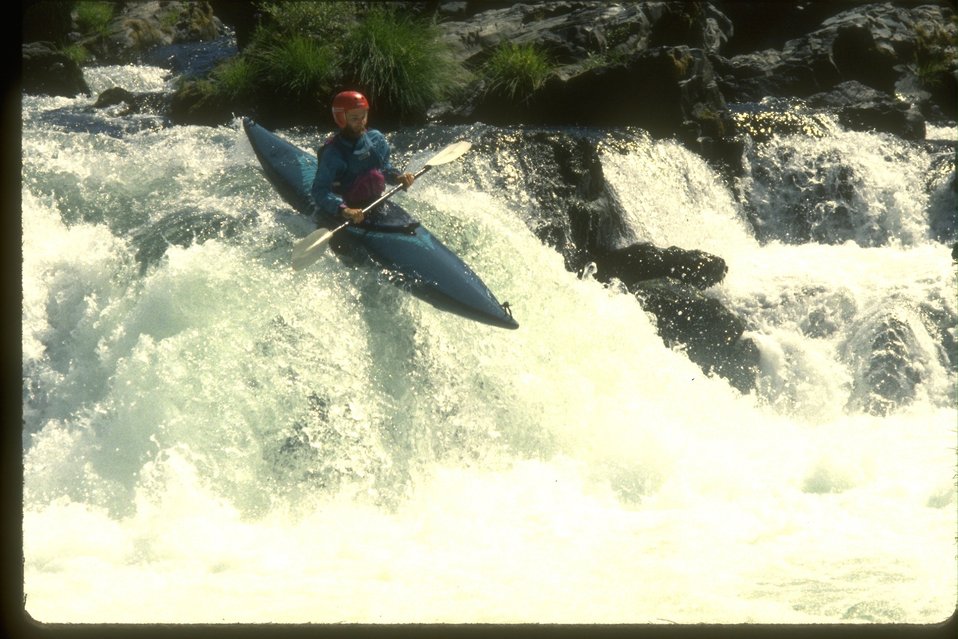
Kayaking on the North Umpqua River.